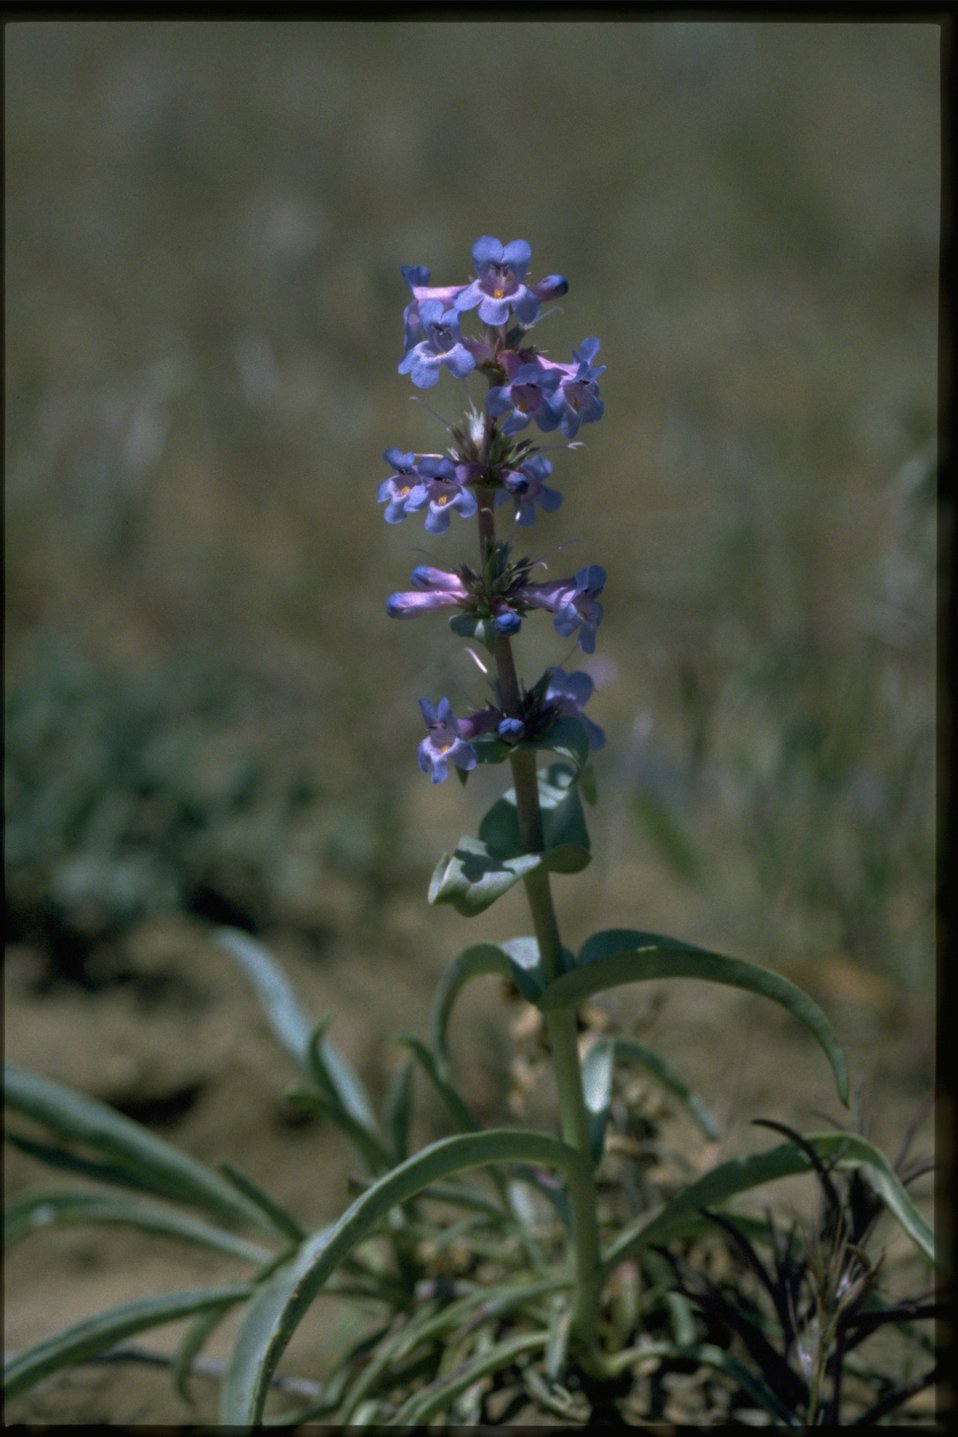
Medium shot of Penstemon.